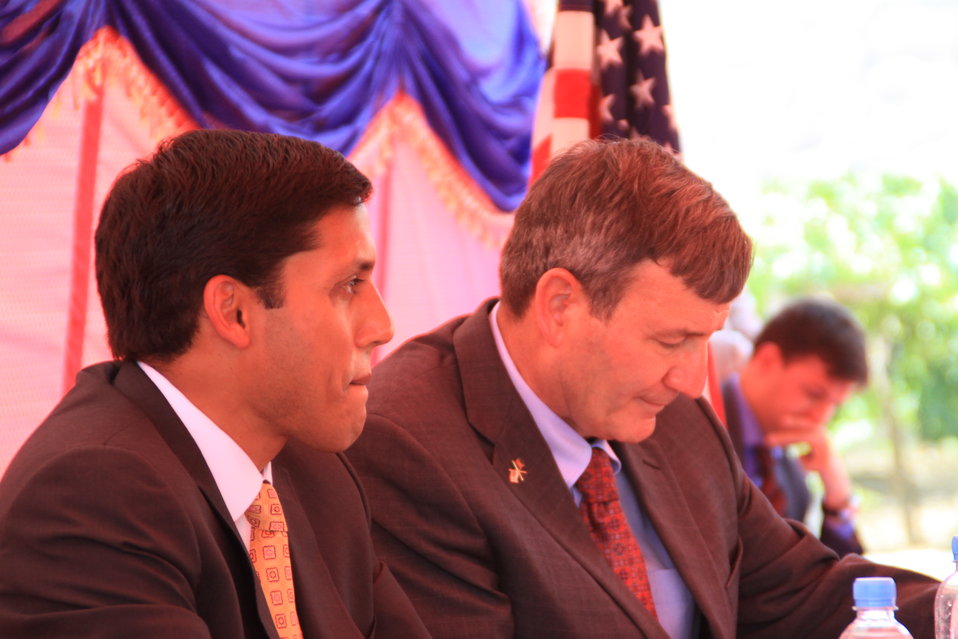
Baddam Bagh Farm